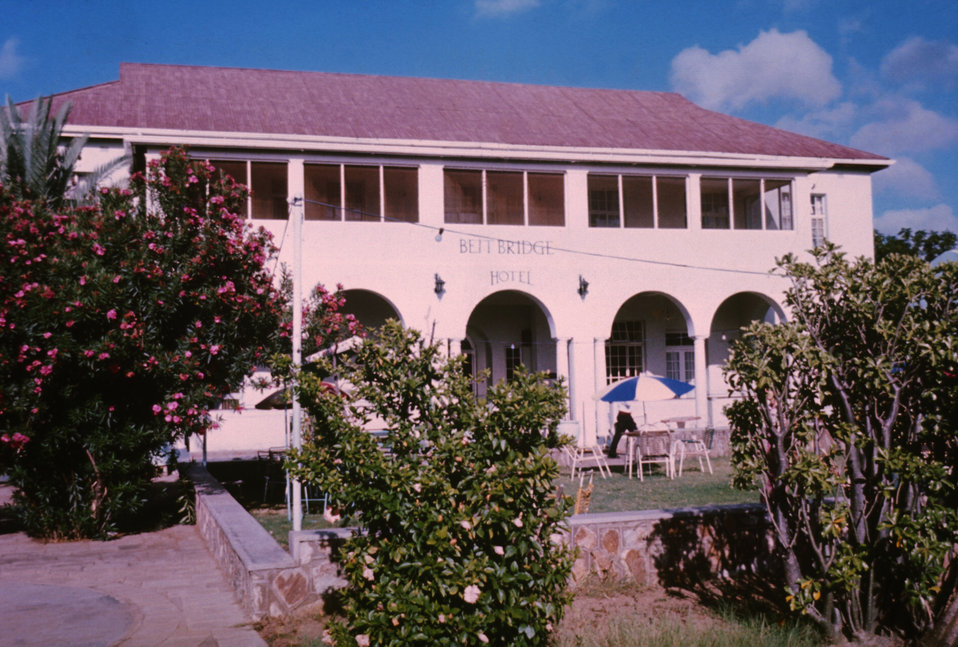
This 1975 photo shows the Beitbridge Hotel, which was taken during a Marburg virus investigation in Rhodesia, now Zimbabwe.